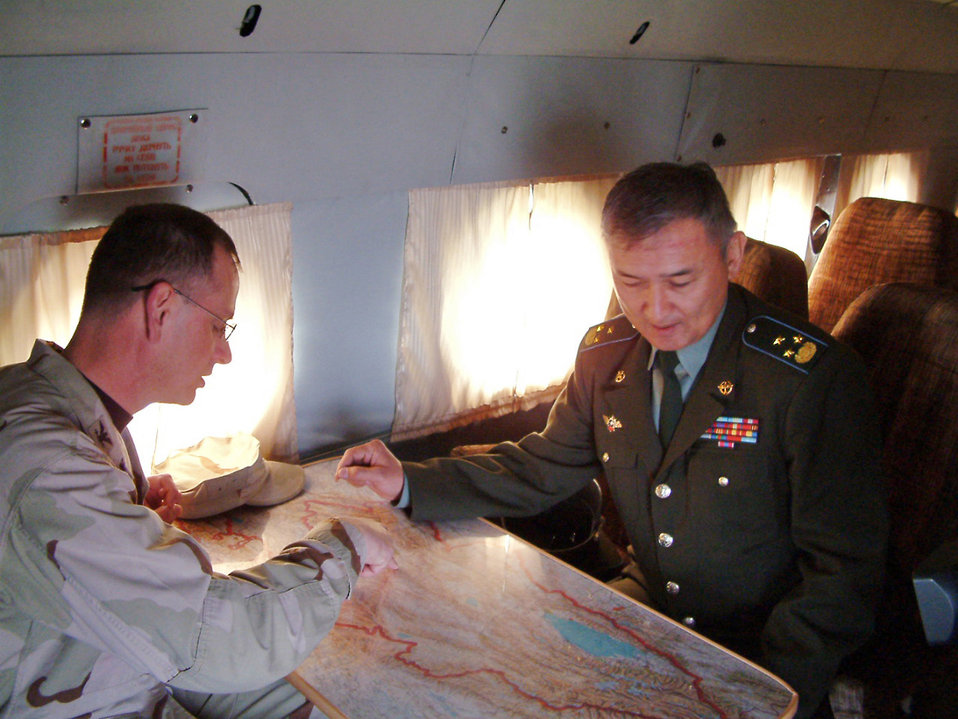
Tour marks milestone

Col. Randy Kee discusses flight routes aboard a Mi-8 Hip helicopter with Kyrgyz Air Force Col. Saifutdin Azizov during a historic first U. S. military tour of Kyrgyzstan's Frunze Air Base No. 1. Colonel Kee is commander of the 376th Air Expeditionary Wing.